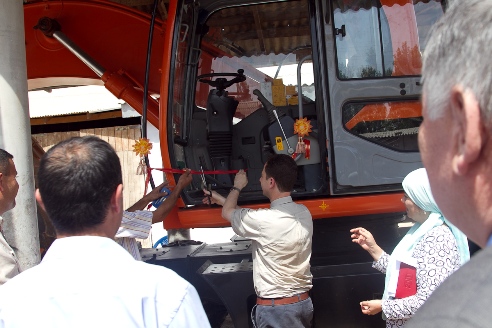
U.S. and Tajik Representatives Participate in a Handover Ceremony

USAID/Tajikistan Jeffrey Lehrer, Deputy Chairman of Qubodiyon District Ergashev Ziyodali, Tajik Head of Water Users Associations Support Department of the Ministry of Melioration and Water Resources Eshmirzoev Ismat, representatives of Tajik water users associations, and WUASP staff participate in a handover ceremony in which the U.S. government, through the Water User Association Support Program (WUASP) funded by the U.S. Agency for International Development (USAID), donates a wheeled excavator to the Federation of Water Users Associations “Sarob” in Qubodiyon district of Khatlon Oblast in Tajikistan on May 24, 2011.